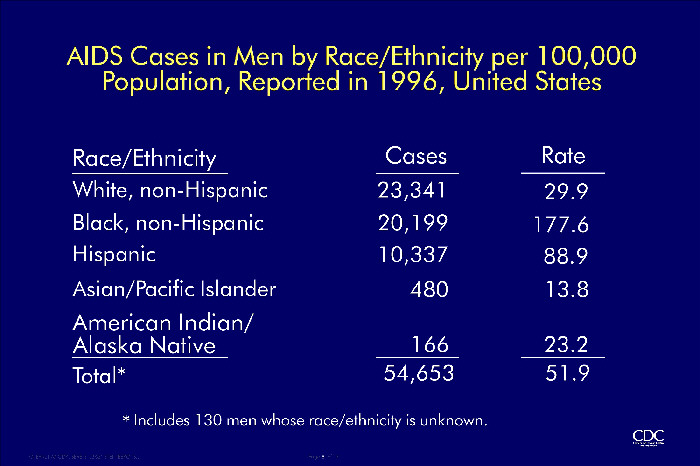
AIDS Cases in Men by Race/Ethnicity per 100,000 Population, Reported in 1996, United States